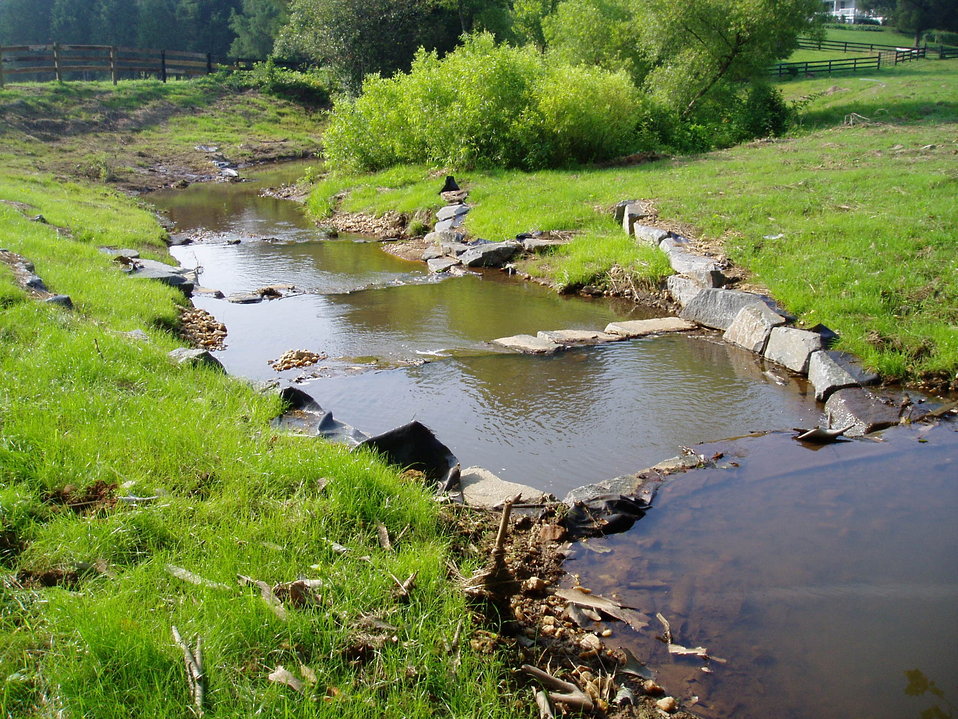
Double Cross-Vane Structure

This structure was installed as part of the Beaver Run stream resotration project for grade-control.